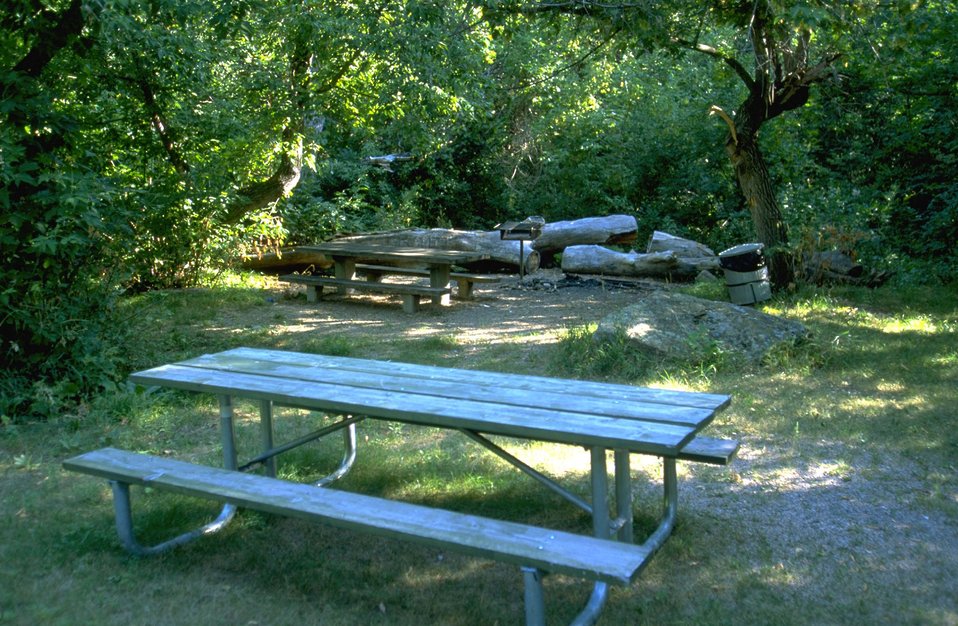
Alkali Creek Trailhead campsite at the south end of Fort Meade